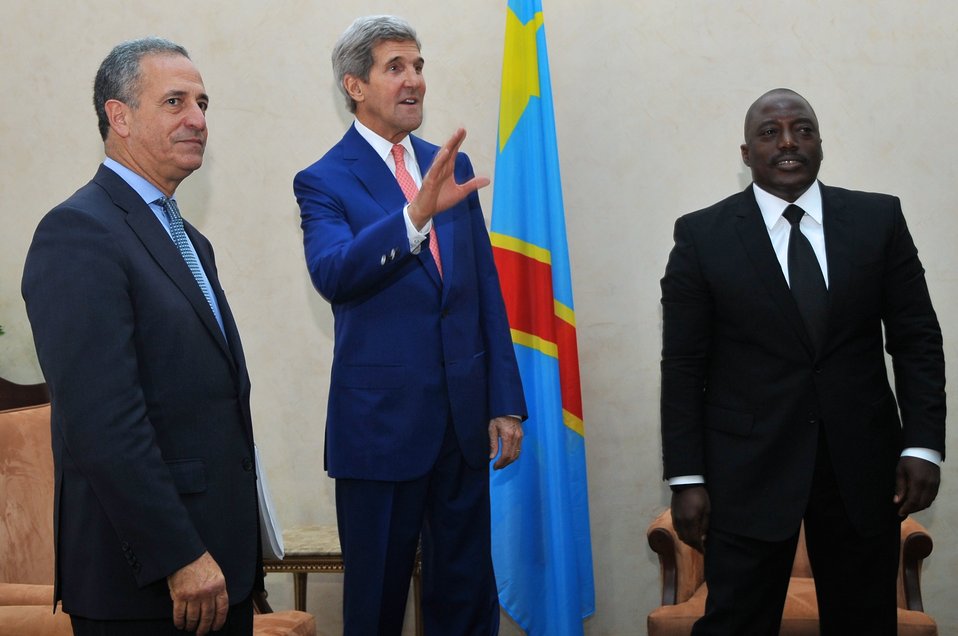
Secretary Kerry, Special Envoy Feingold Meet With President Kabila in Democratic Republic of Congo

U.S. Secretary of State John Kerry waves before he and U.S. Special Advisor for the Great Lakes Region and the Democratic Republic of the Congo Russell Feingold meet with DRC President Joseph Kabila in Kinshasa on May 4, 2014.